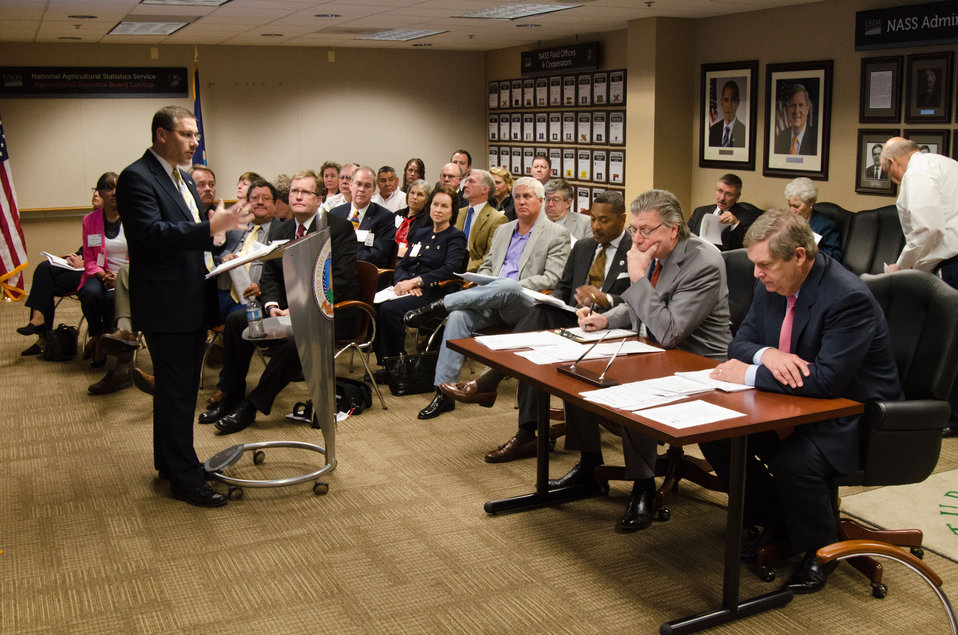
Lance Honig (left), Chief, Crops Branch, National Agricultural Statistics Service explains the information in the United States Department of Agriculture’s, National Agricultural Statistics Service, March Agricultural Survey to Dr. Joseph Glauber (center), Chief Economist for the U.S. Department of Agriculture and Agriculture Secretary Tom Vilsack (right). Secretary Vilsack signed the survey releasing the information at the USDA, NASS Lockup in Washington, D.C., on Friday, March 30, 2012. The NASS lockup is agricultural commodity information held until the Secretary of Agriculture or the Secretary’s Designee has signed and released the information. The signing is the official act of recognizing the information as an official USDA document.